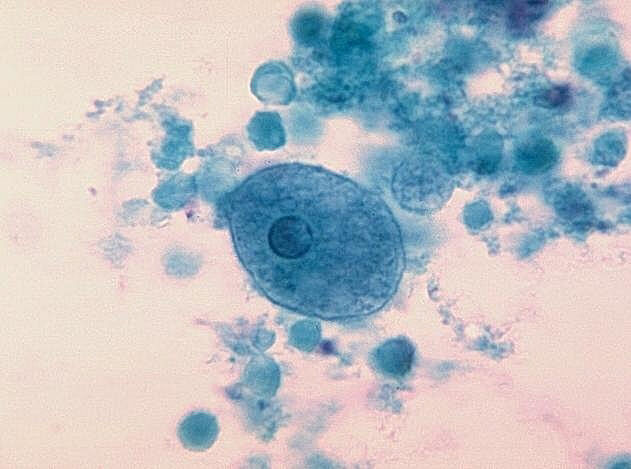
Entamoeba histolytica in liver aspirate. Trichrome stain.